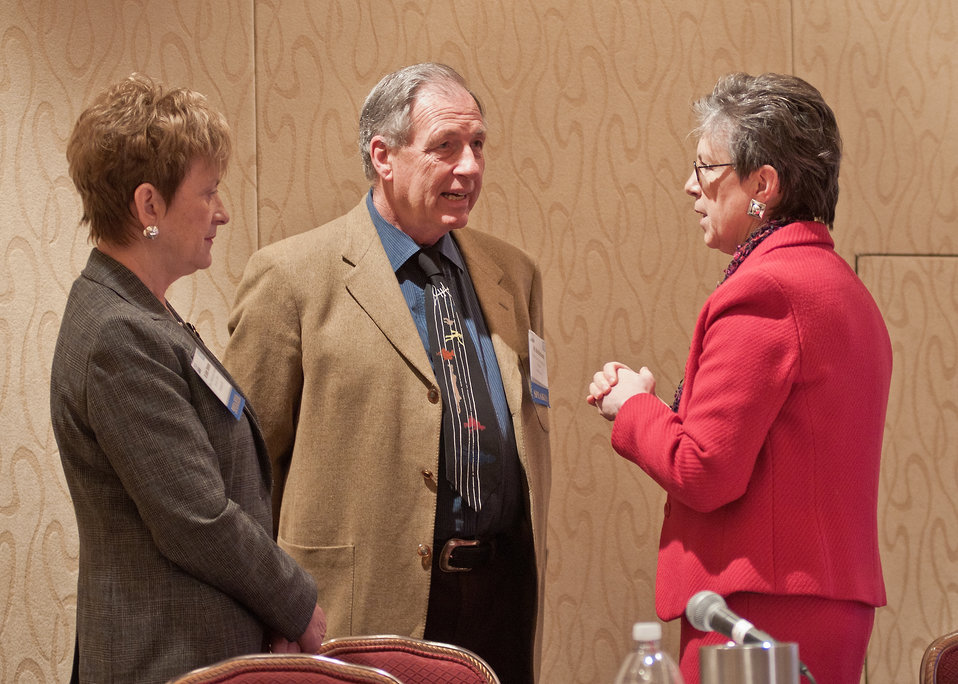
From left: Janey Thornton, Deputy Under Secretary, Food, Nutrition and Consumer Services, Ken Richards, Research Manager (retired), Canadian Genetic Resource Program, Plant Gene Resources of Canada, Agriculture and Agri-Food Canada, Saskatoon Research Centre Saskatoon, Saskatchewan Alberta, Canada and Dr. Catherine Wotecki, Under Secretary, Research, Education and Economics and Chief Scientist prior to speaking at the Global Food Security afternoon breakout session at the 2012 Agricultural Outlook Forum, “Moving Agriculture Forward, Growing, Innovating and Celebrating 150 Years” held at the Crystal gateway Marriott Hotel Arlington, Virginia, Friday, February 24, 2012. The session discussed and reviewed challenges associated with feeding a growing world population with a currently strained resource base.